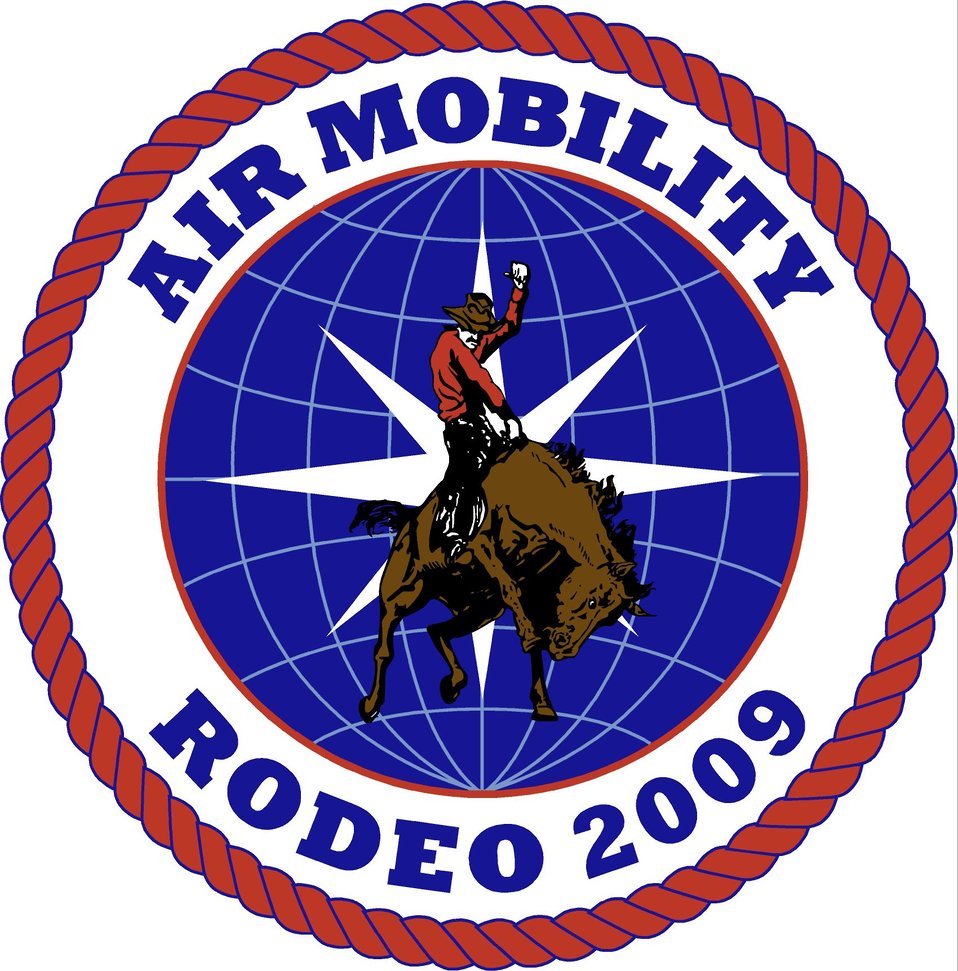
AMC Rodeo 2009

Air Mobility Command's RODEO 2009 will be held at McChord Air Force Base, Wash., July 19 to 25.